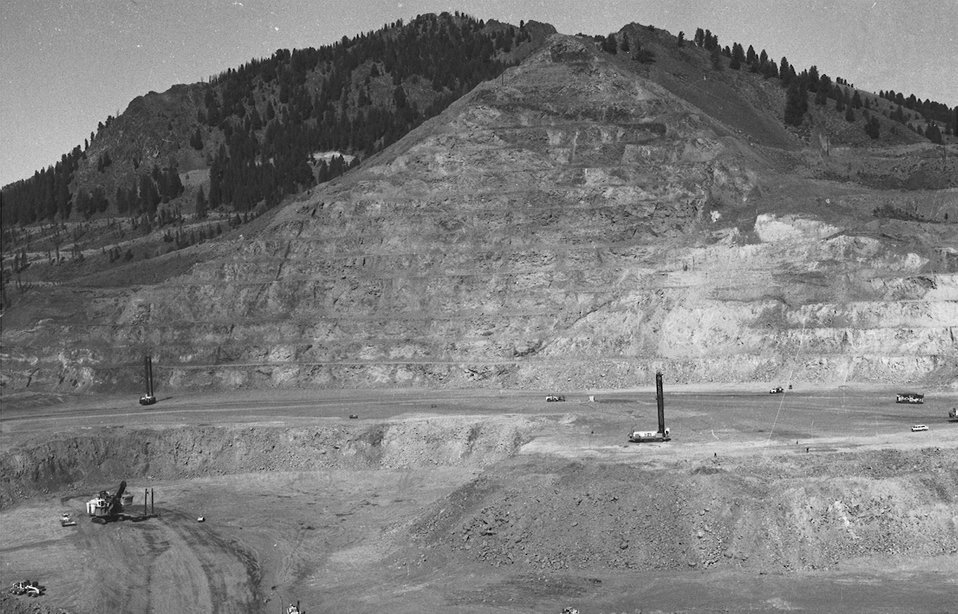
Thompson Creek Pit Challis Field Office UCSC Upper Columbia Salmon Clearwater District